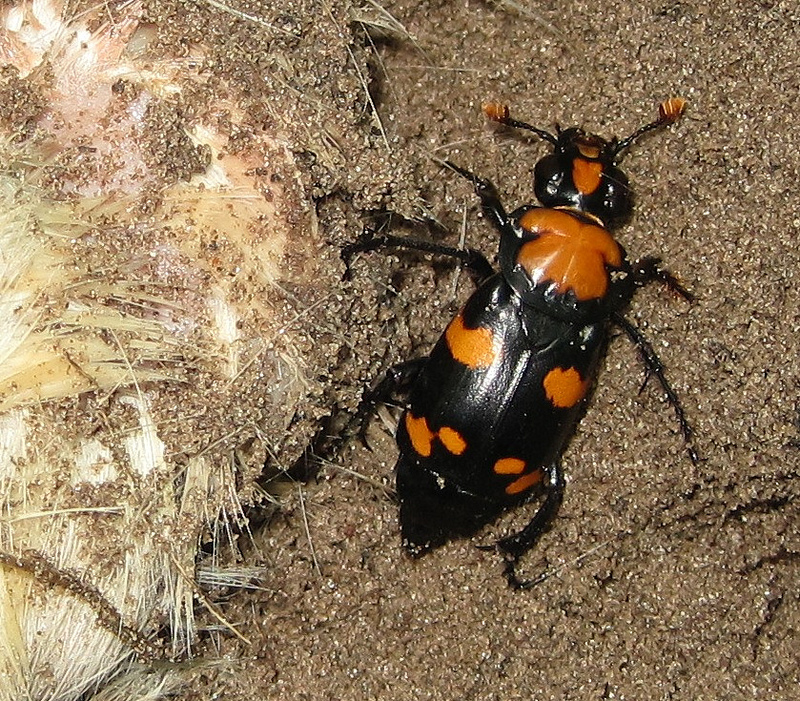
American Burying Beetle

Pictured here is an American Burying Beetle. This close up shot shows its unique colors and markings.

Location: Price Ranch near Burwell, Nebraska

Credit: Lindsay Vivian / USFWS

Photo Contest Entry #50